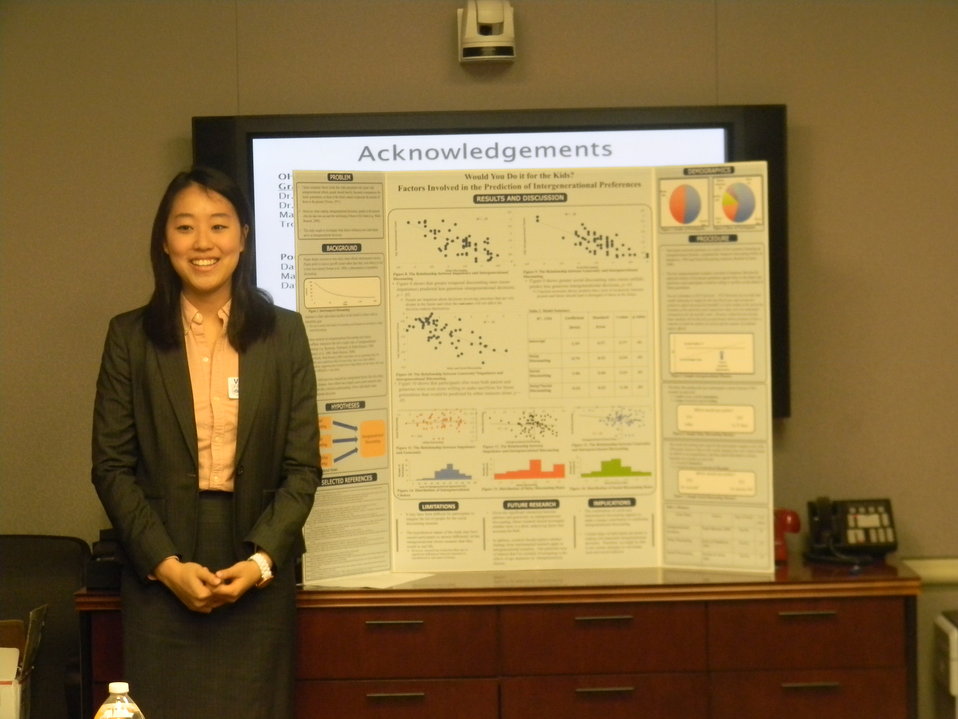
Sarah Pak presents at NIDA2

Sarah Pak, 1st place winner of the 2011 Addiction Science Awards, presents her study to NIDA staff